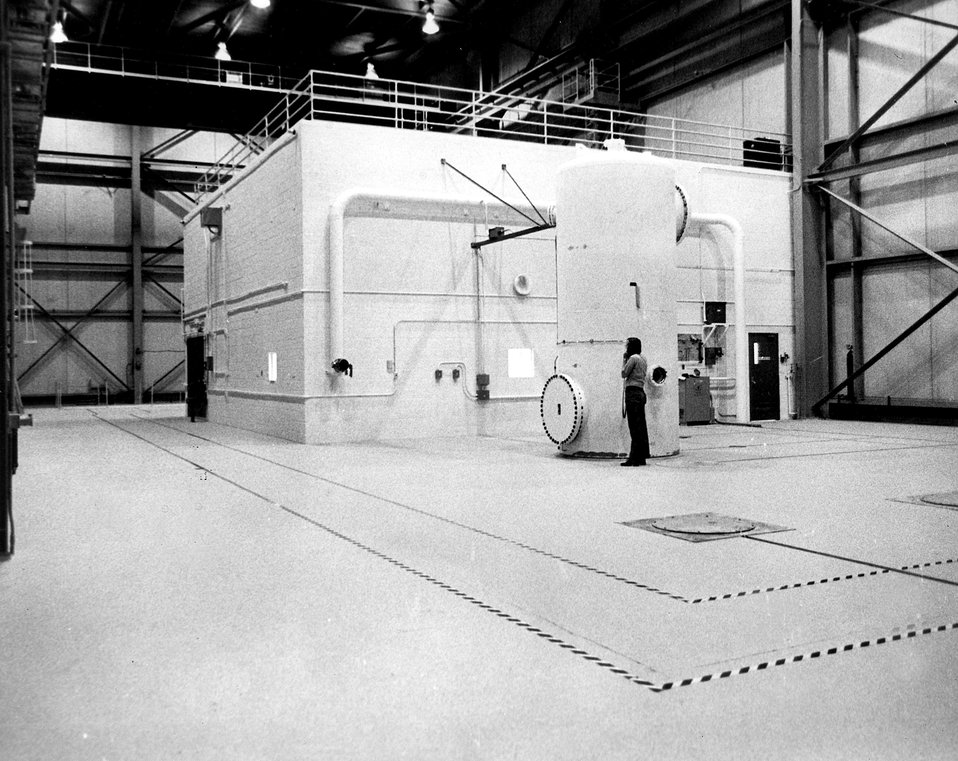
The equipment decontamination facility atop the hot cells
at the U.S. Atomic Energy Commission's Argonne National Laboratory